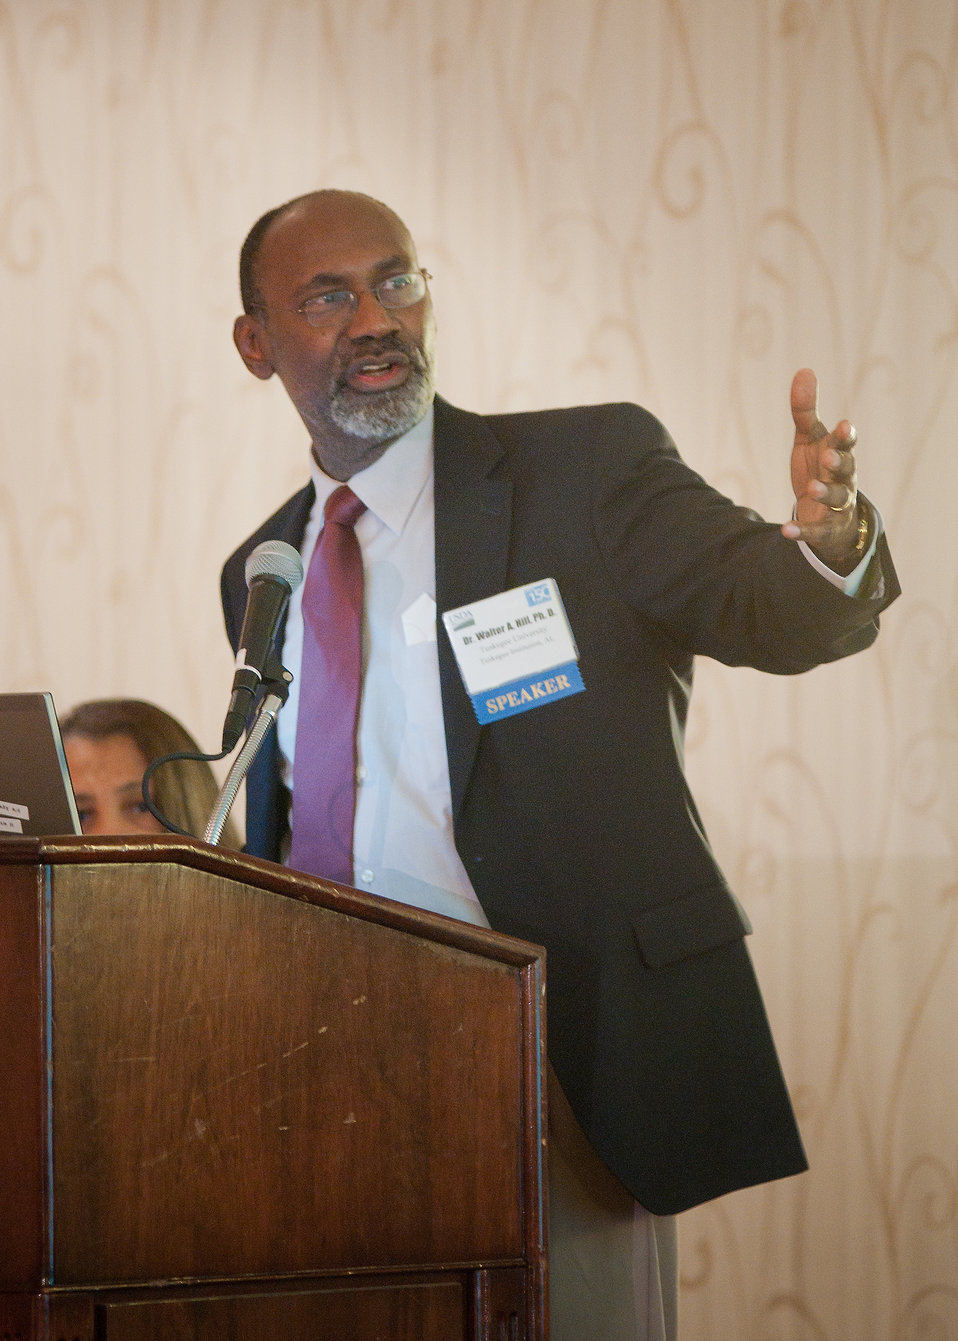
Dr. Walter Hill, Dean, College of Agricultural, Environmental and Natural Sciences/Director, George Washington Carver Agricultural Experiment Station, Tuskegee University, Tuskegee, Alabama spoke during the breakout session Innovative Solutions for Meeting the Challenges of Small and Disadvantaged Farmers at the 2012 Agricultural Outlook Forum, “Moving Agriculture Forward, Growing, Innovating and Celebrating 150 Years” held at the Crystal gateway Marriott Hotel Arlington, Virginia, Friday, February 24, 2012. The session illustrated the important role small and beginning farmers and ranchers have in agriculture.